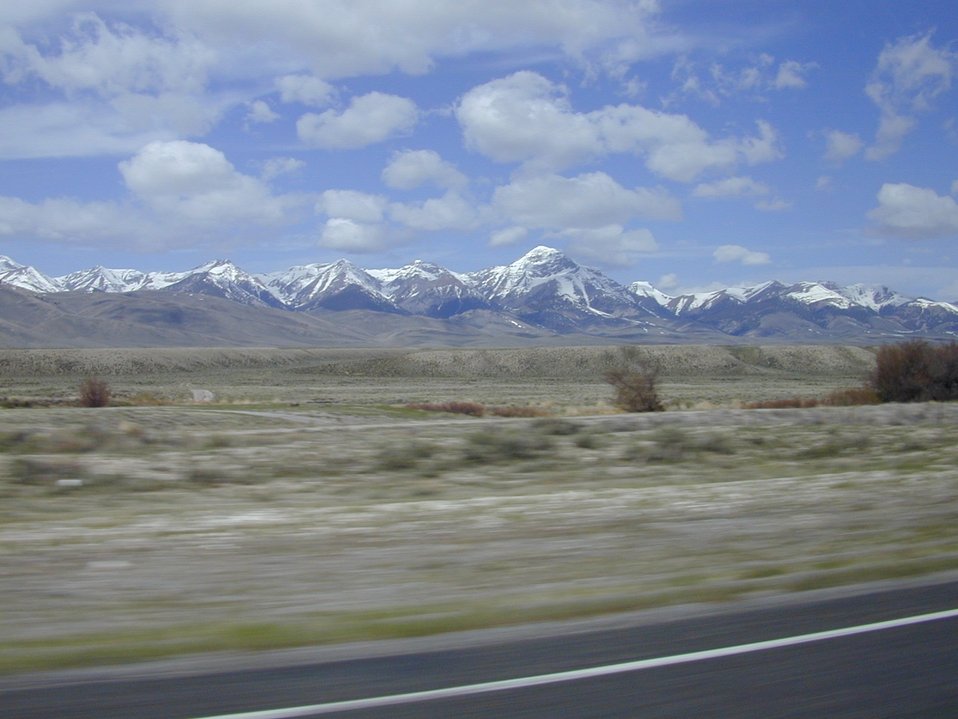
Lemhi Range Birch Creek Valley Idaho Falls Field Office USRD Upper Snake River District